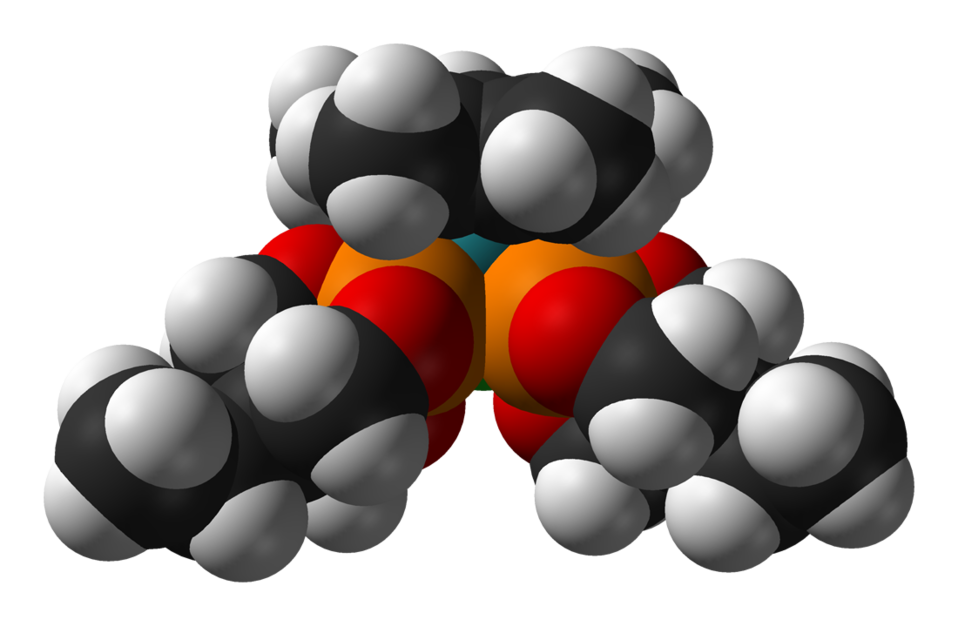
Space-filling model of the caged phosphite complex (CpMe5)RuCl(EtCage)2 as found in the crystal structure. Colour code: Carbon, C: black Hydrogen, H: white Phosphorus, P: orange Oxygen, O: red Ruthenium, Ru: turquoise Chlorine, Cl: green Crystal structure by X-ray diffraction from Organometallics (1996) 15, 5209–5215. Model constructed in CrystalMaker 8.1. Image generated in Accelrys DS Visualizer.